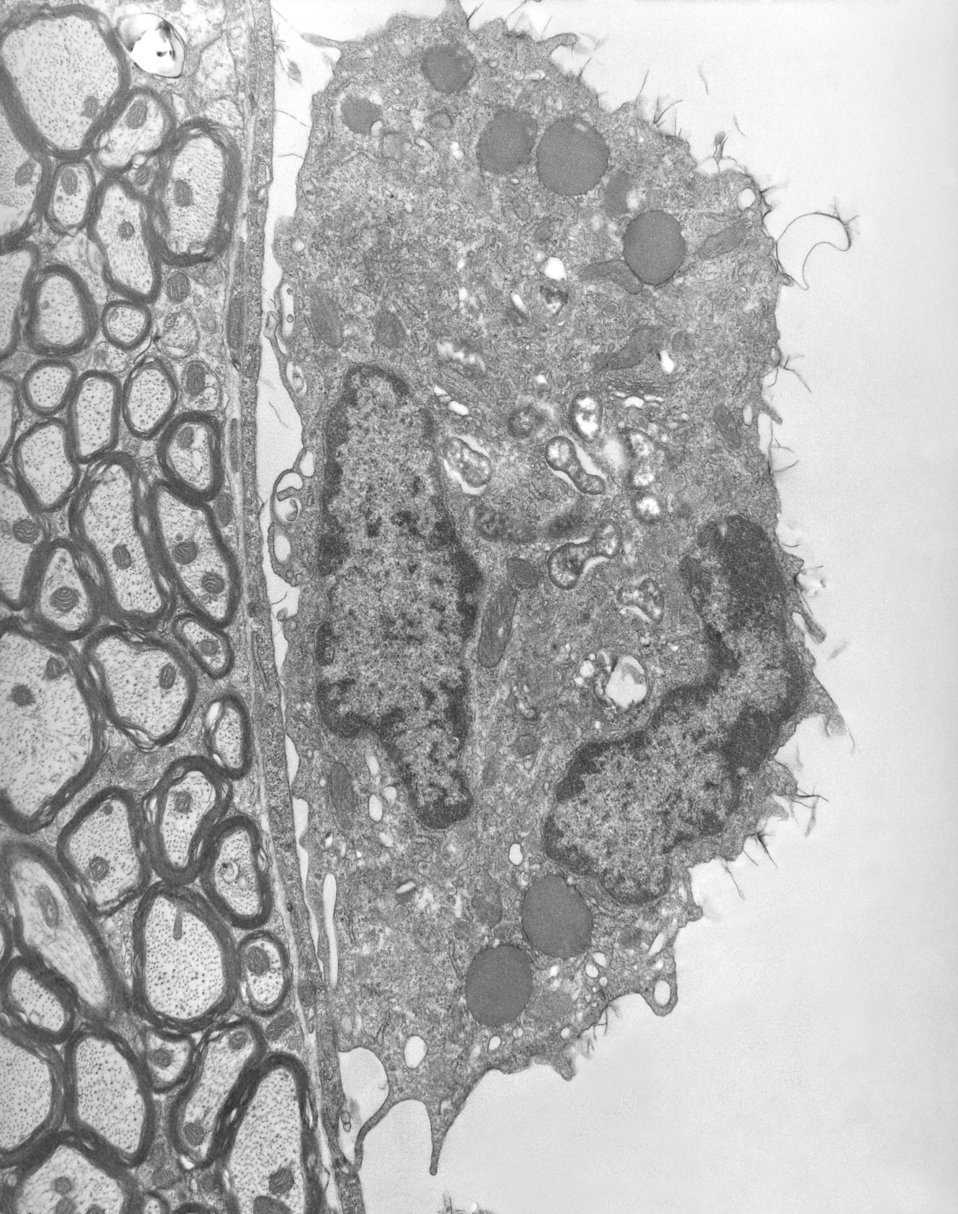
This 1976 transmission electron micrograph (TEM) depicted a brain capillary of a mouse that had been experimentally infected intravenously with Orientia tsutsugamushi rickettsial micro-organisms. Adhering to the luminal surface of the capillary's endothelium was a large macrophage containing multiple organisms free within its cytoplasm.